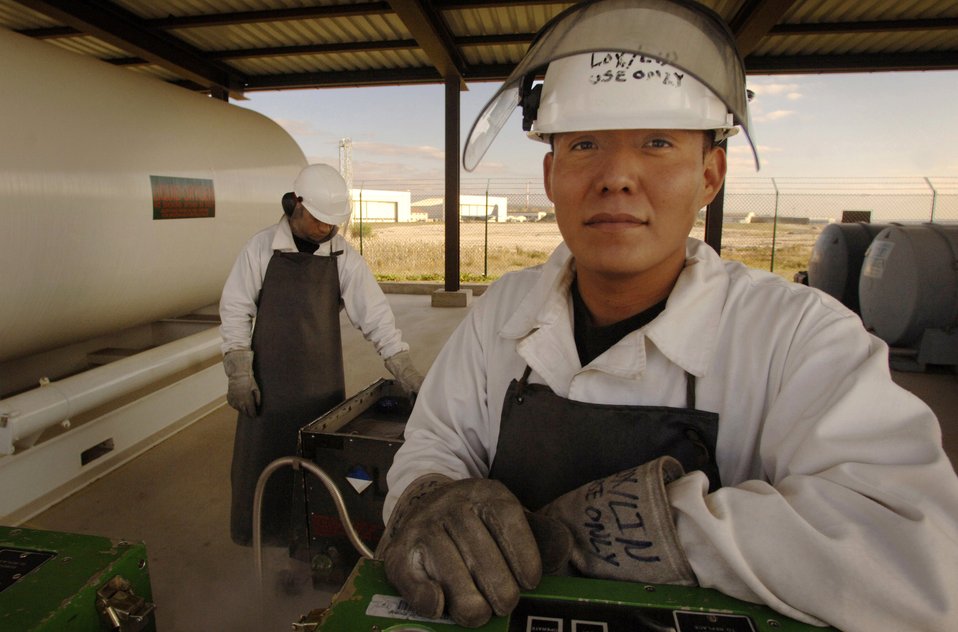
Balancing traditional, mainstream cultures as part of the Navajo Nation

Airman 1st Class Uriah Hale-Huskon is a cryogenics fuels technician assigned to the 435th Logistics Readiness Squadron at Ramstein Air Base, Germany. He is also an enrolled member of the Navajo Nation from Window Rock, Ariz., where he spent most of his youth growing up on the Navajo reservation before attending high school in Salt Lake City and joining the Air Force in 2004.